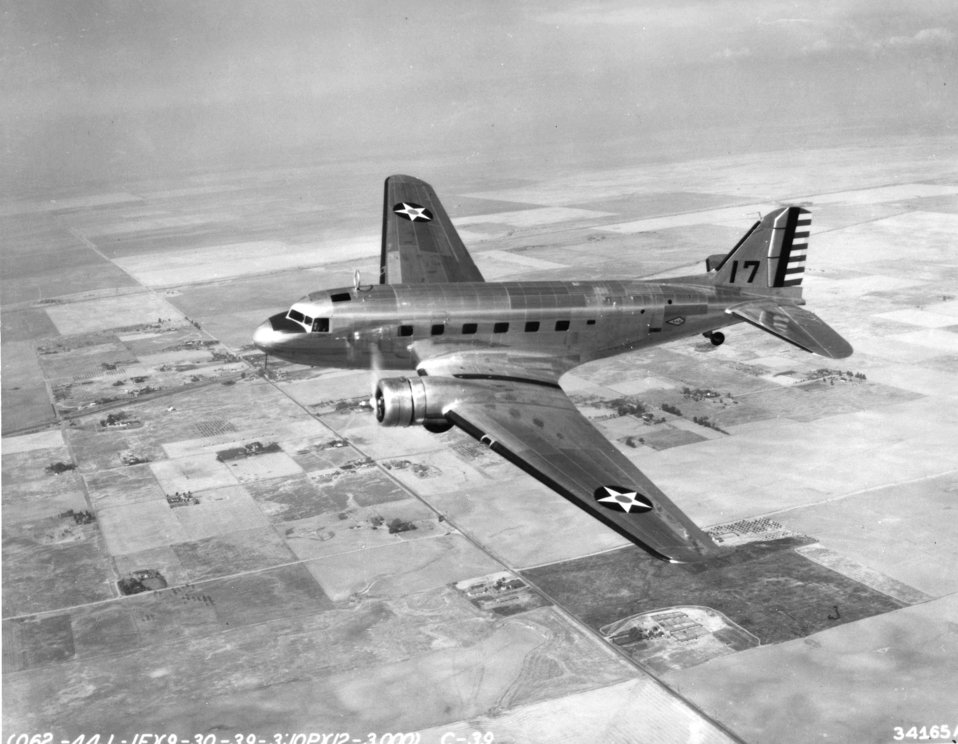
Douglas C-39 transport

1940's -- C-39s were called upon to perform many rigorous transport duties early in WW II, including the evacuation of personnel from the Phillipines to Austrailia in December 1941.